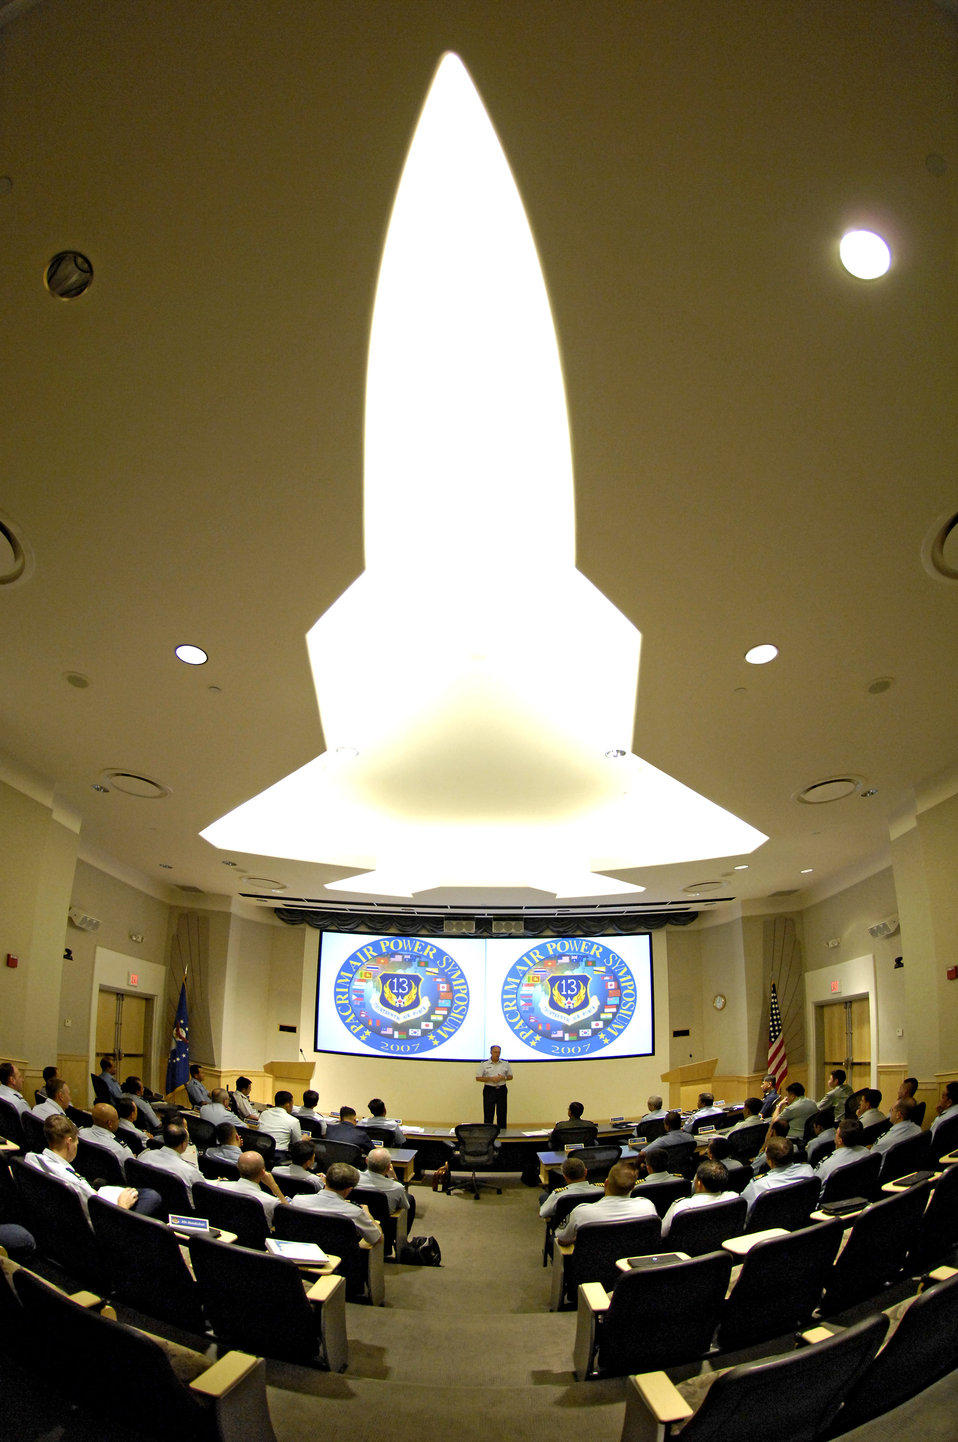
Pacific Rim Airpower Symposium provides forum

Lt. Gen. Loyd S.